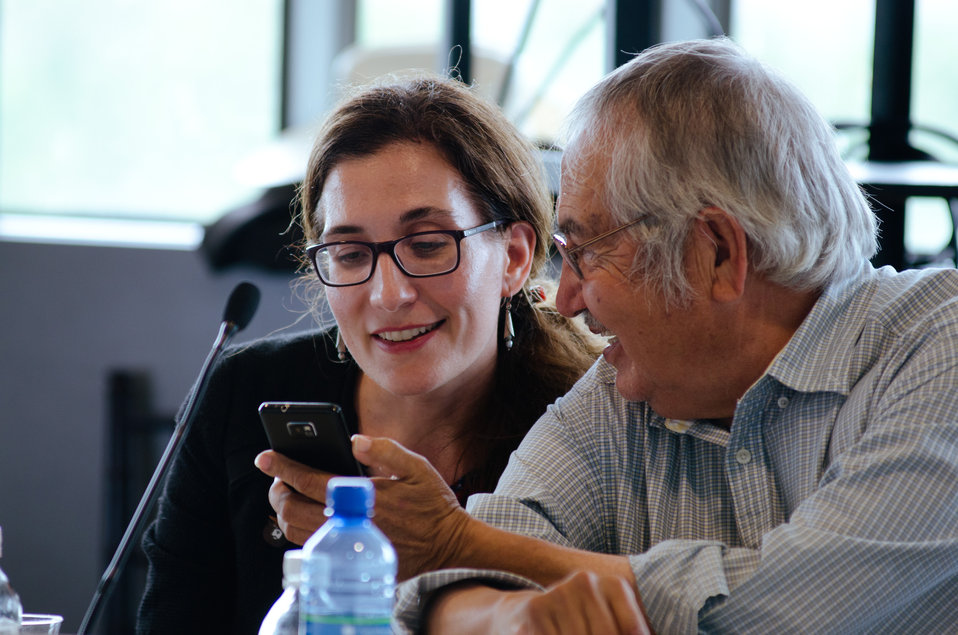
Navaho Nation Rancher from Shiprock, NM Gilbert Harrison (right) shows U.S. Department of Agriculture (USDA) Acting Deputy Assistant Secretary Office of Civil Rights Lisa Pino something on his phone during a break in the first business meeting of USDA’s Council for Native American Farming and Ranching (CNAFR) held at the National Museum of the American Indian in Washington, D.C. on Tuesday, Aug. 14, 2012. CNAFR was created to advise the Secretary on ways to eliminate barriers to participation for Native American Farmers and Ranchers in USDA programs. The Council was established as part of the Keepseagle settlement, and is conducted under the oversight of USDA's Office of Tribal Relations under the Office of the Secretary of Agriculture.